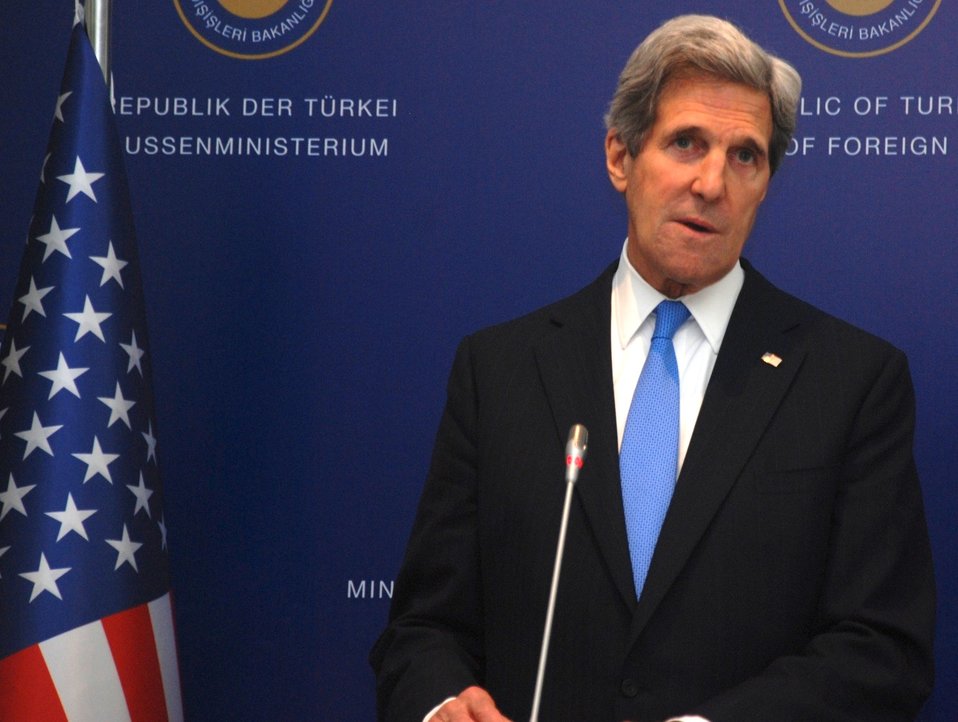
Secretary Kerry Delivers Remarks at Joint Press Availability in Istanbul, Turkey

U.S. Secretary of State John Kerry deliver remarks at a joint press availability with Turkish Foreign Minister Ahmet Davutoğlu in Istanbul, Turkey, April 7, 2013.